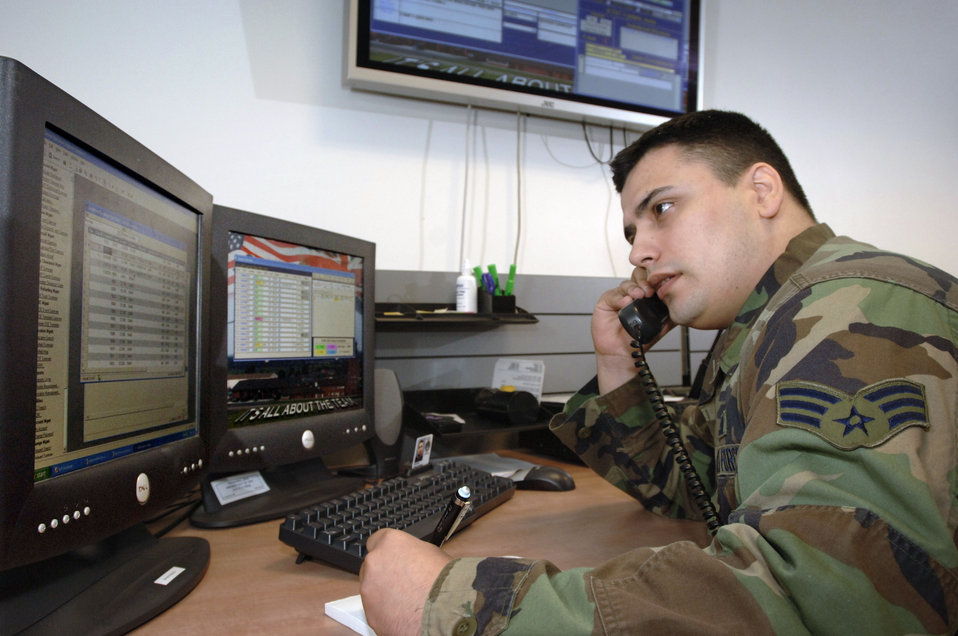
Creative troops, maintenance keep vintage tankers airborne

Senior Airman Kimieh Deoliveira coordinates the painting of a KC-135 Stratotanker at Royal Air Force Mildenhall, England, July 26. The Airman is with the 100th Maintenance Operations Squadron. He uses a computer-based aircraft status overview program to help ensure the nearly 50-year-old aircraft gets the maintenance it needs.